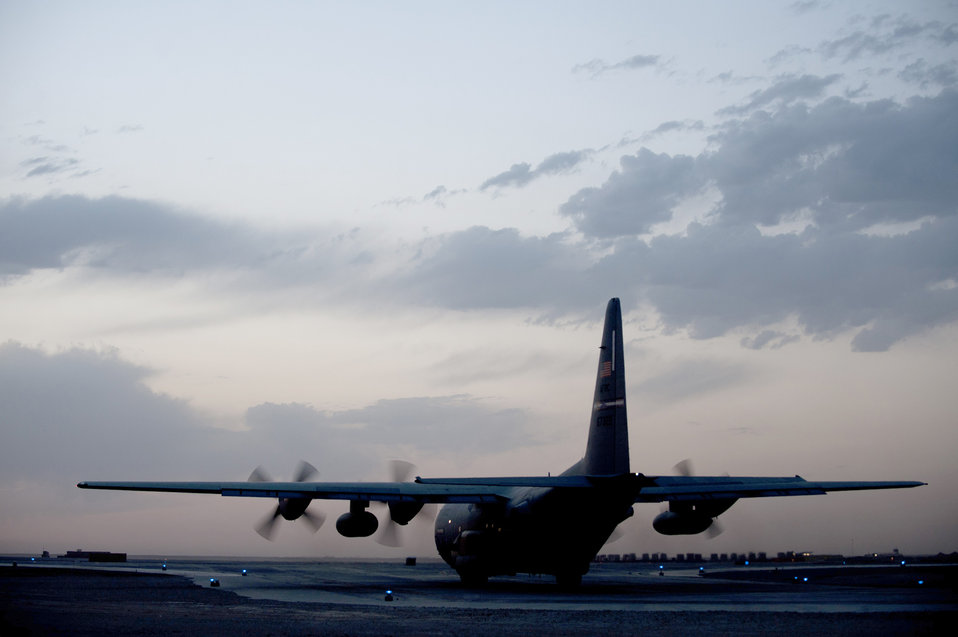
Transporting the wounded

A C-130 Hercules taxis May 21, 2011, prior to takeoff from Camp Bastion, Afghanistan.